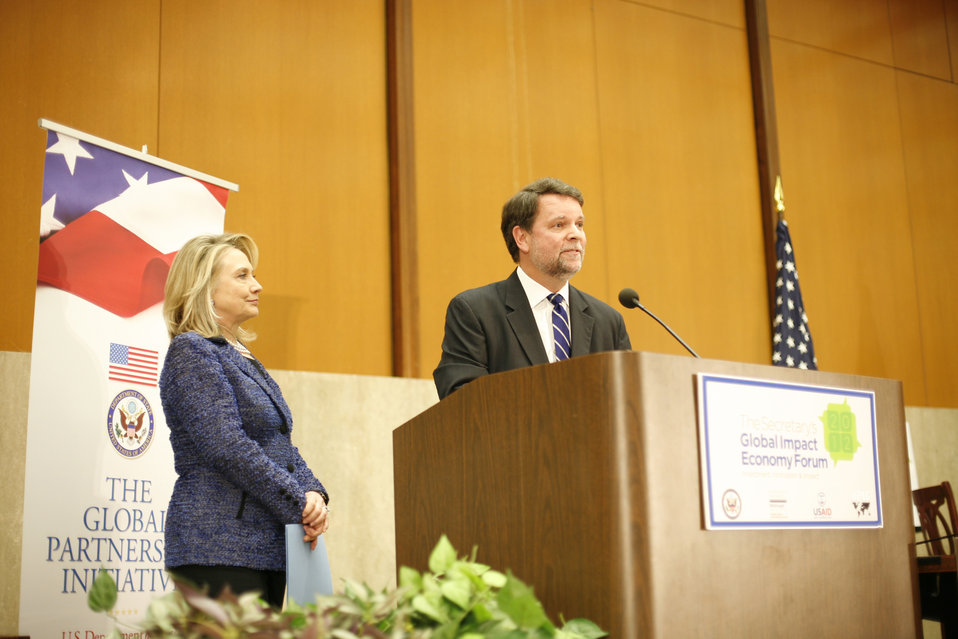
The Global Impact Economy Forum, 4-26-12

Special Representative for Global Partnerships Kris Balderston introduces U.S. Secretary of State Hillary Rodham Clinton at the first-ever Global Impact Economy Forum at the U.S. Department of State in Washington, D.C., on April 26, 2012.